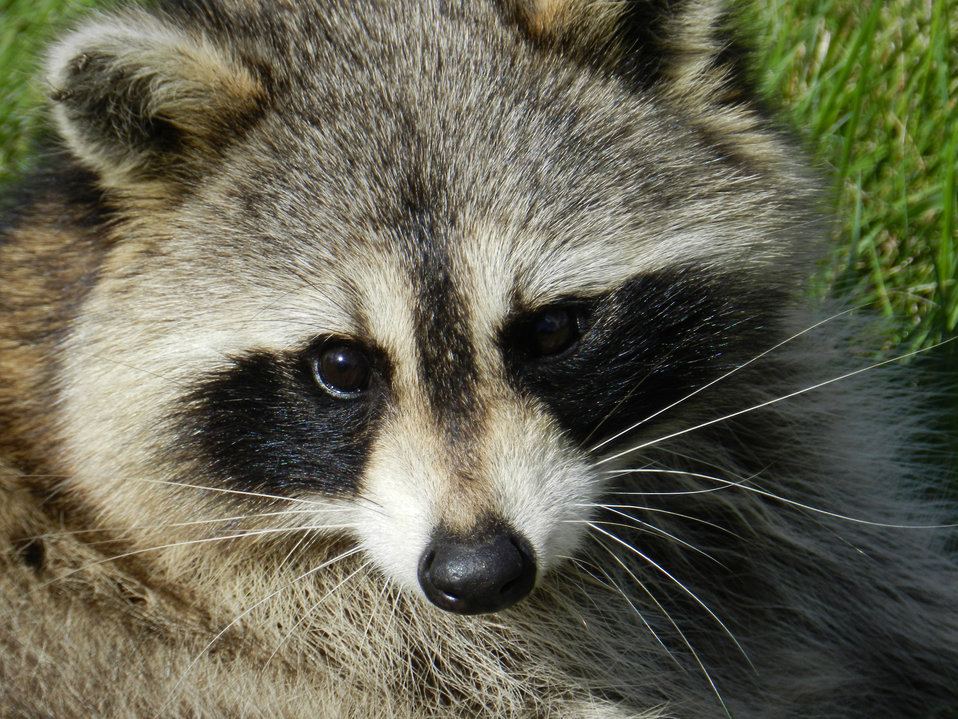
Raccoon # 4

Raccoon close.